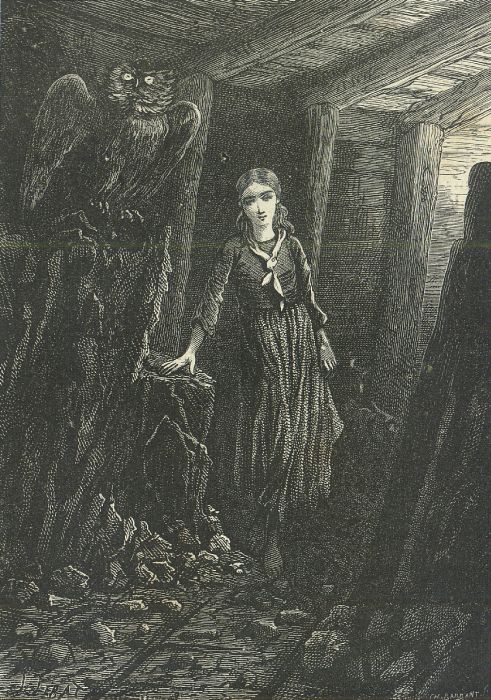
An illustration from the novel 'The Child of the Cavern' (alternative English titles for this novel include: Black Diamonds, Black Indies, Child of the Cavern, or Strange Doings Underground and The Underground City) by Jules Verne drawn by Jules Férat. Polski: Ilustracja powieści Juliusza Verne'a 'Czarne Indie' autorstwa Julesa Férata. Français : 'Les Indes noires', Jules Férat. Orginal description from the book: Français : Nell.